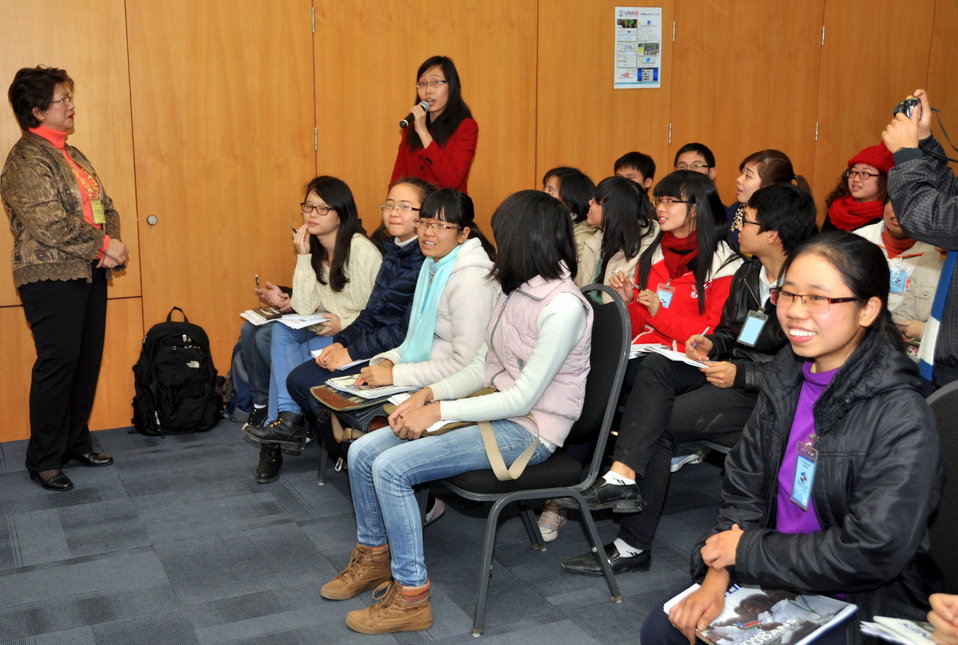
Speaker program on Climate Change and Clean Energy at the American Center

Hanoi, January 16, 2013